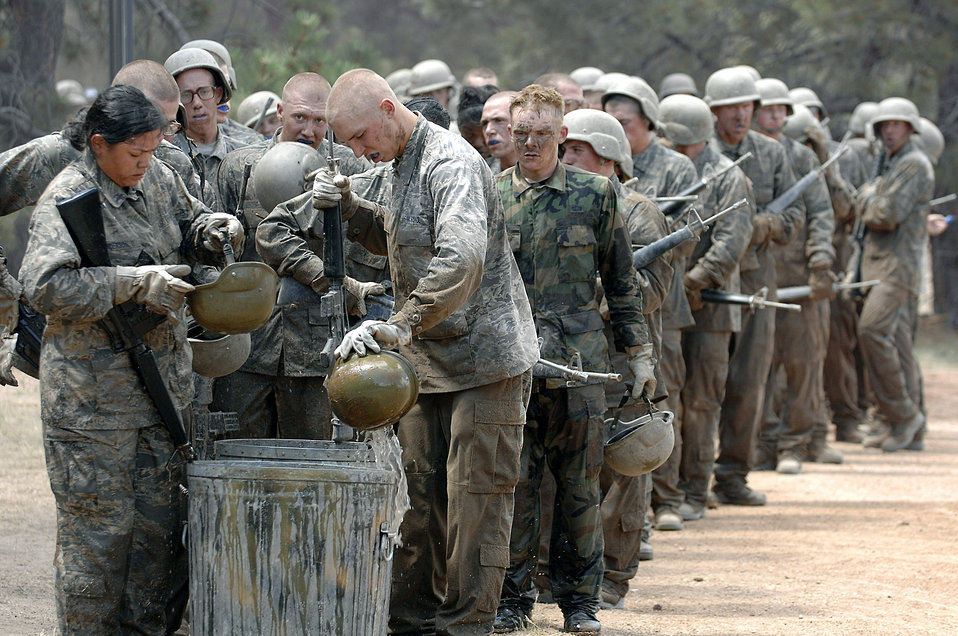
One more day down...

U.S. Air Force Academy basic cadets dunk their training rifles and helmets after completing the assault course July 16 at the Jacks Valley training area near Colorado Springs, Colo., during the field training portion of basic training.